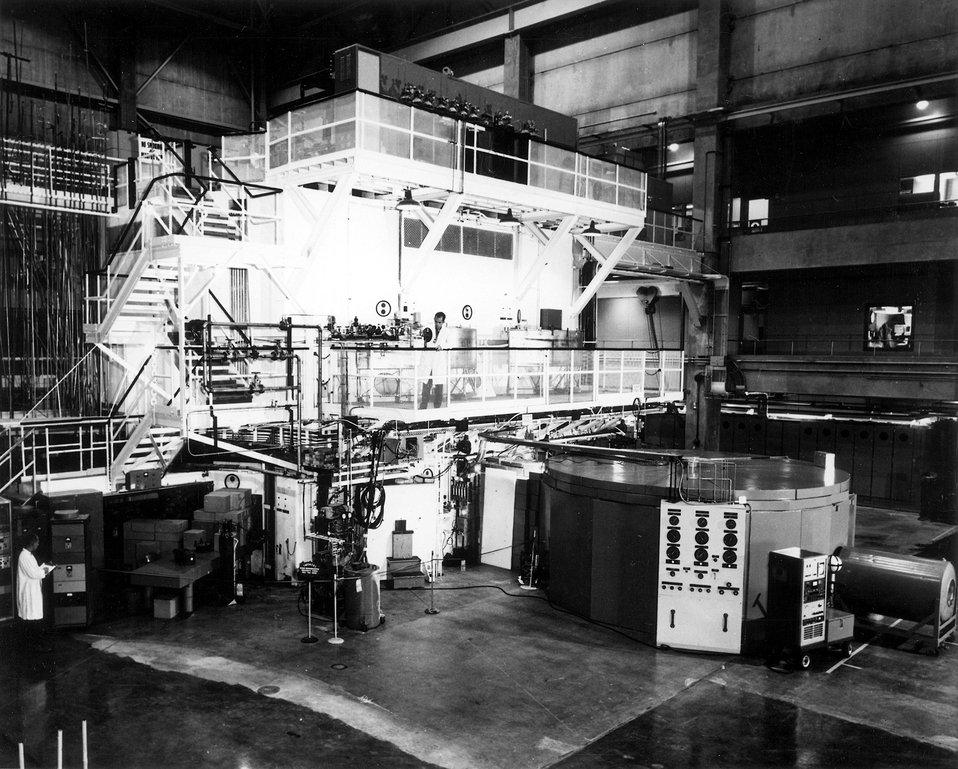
Interior view of Materials Testing Reactor at the U.S. Atomic Energy Commission's National Reactor Testing Station in Idaho. Circa 1974.